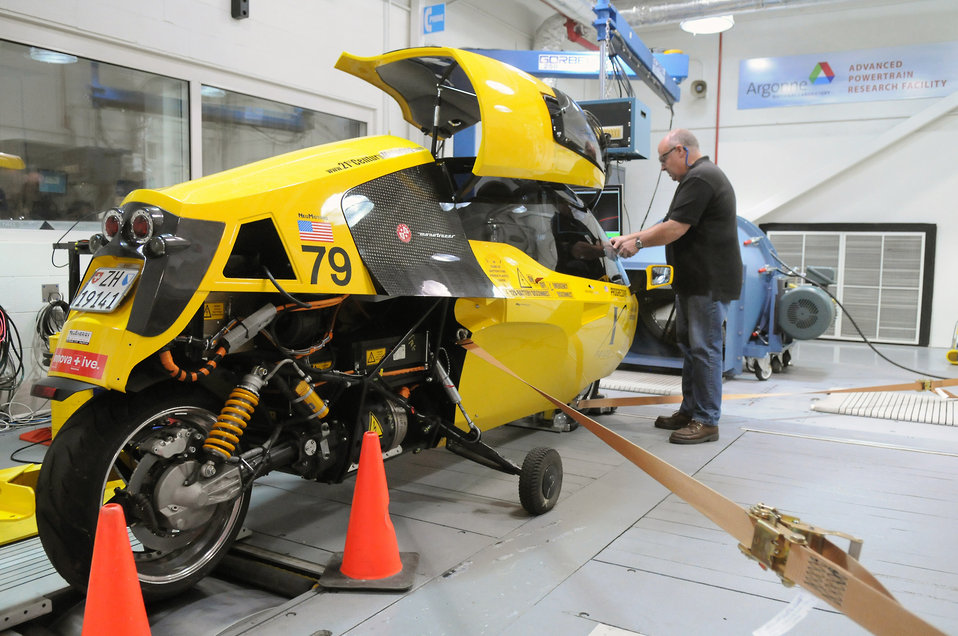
Argonne researcher prepares the E-Tracer 79 for testing at the laboratory's Advanced Powertrain Research Facility (APRF).

Argonne was the last stop for competitors in Progressive Insurance's Automotive X Prize Competition. In August 2010, APRF researchers provided validation testing for the finalists' vehicles to see if they met the competition's goals for performance and efficiency targets.